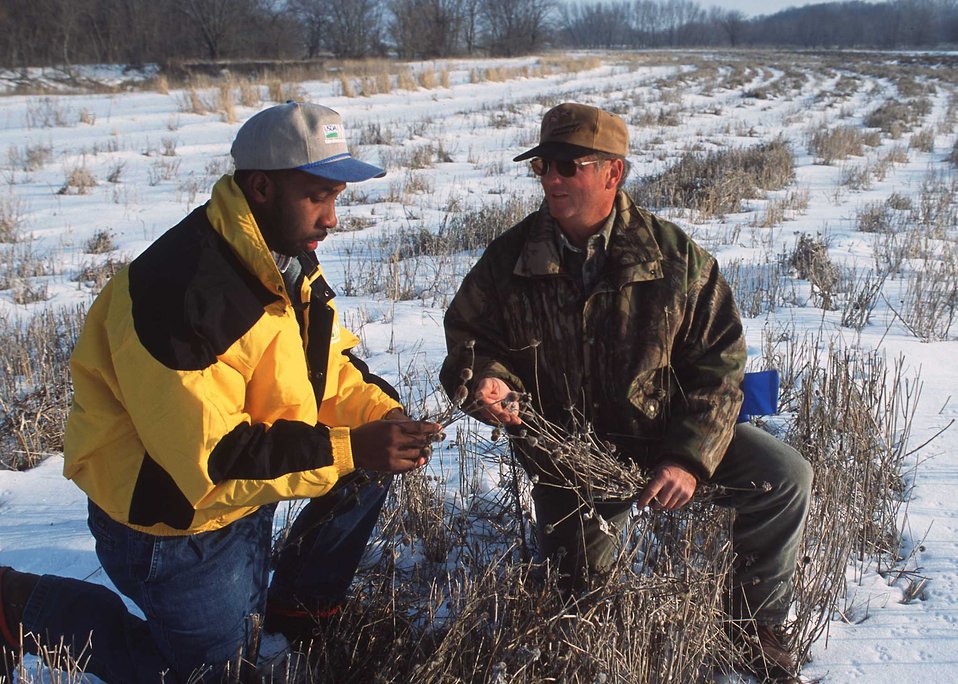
An NRCS field conservationist and landowner in Montgomery County discuss wildlife habitat needs and plans on his farm.